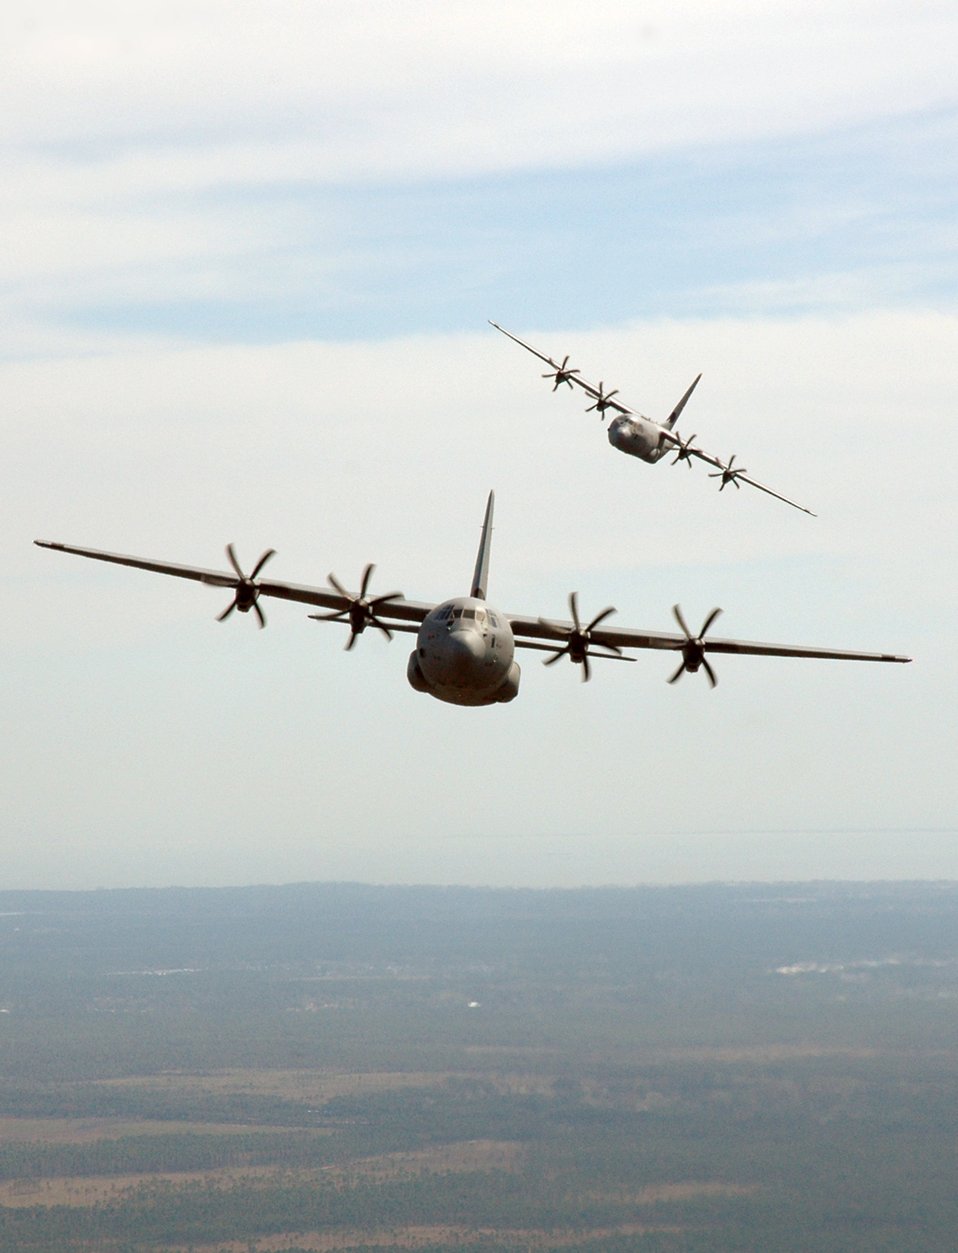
Agency helps expedite C-130 sale to Norway

Two of the Air Force's newest airlifters the C-130J Hercules aircraft fly in formation during a training mission. The C-130J make formation flying easier for aircrews promoting efficiency even in adverse conditions due to the heads-up displays, which allow pilots to view essential flight information while never taking their eyes off the outside environment. Air Force Security Assistance Center officials arranged the sale of four C-130Js to the Norwegian air force.